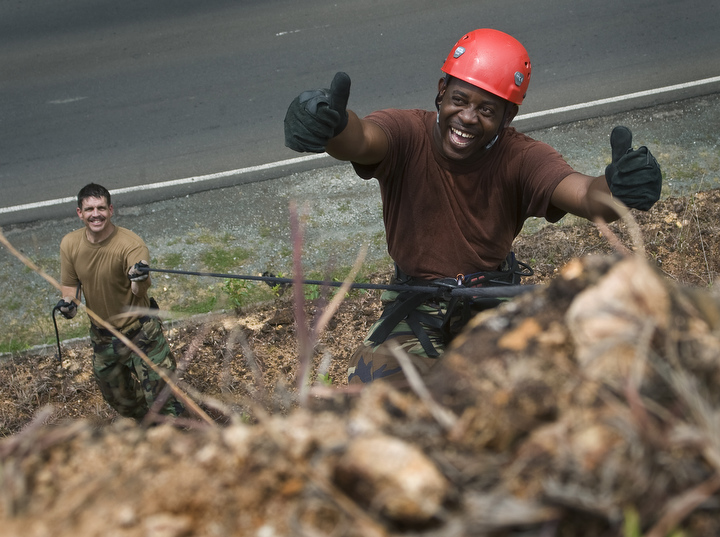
St. Lucia police team with Airmen during Operation Southern Partner

Constable Rene Edward of the Royal St. Lucian police force's special service unit reacts to successfully executing his first rappelling assignment during a subject matter expert exchange on mountaineering step incline rescue missions during Operation Southern Partner June 1 in La Toc, St. Lucia.